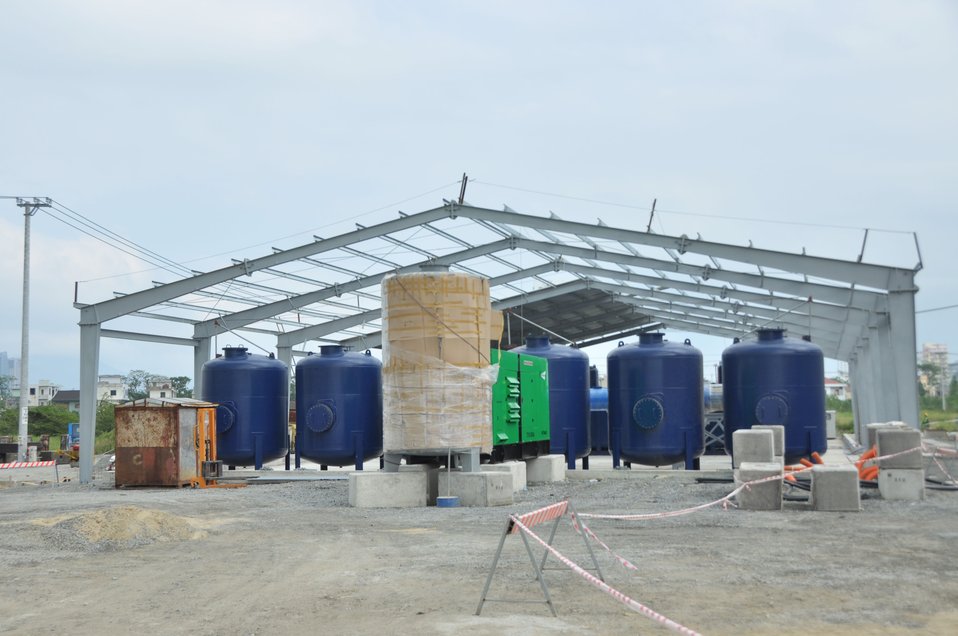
USAID Dioxin Contamination Project Progress: Water Treatment System

Progress at the Environmental Remediation of Dioxin Contamination Project at the Danang Airport

December 19, 2013